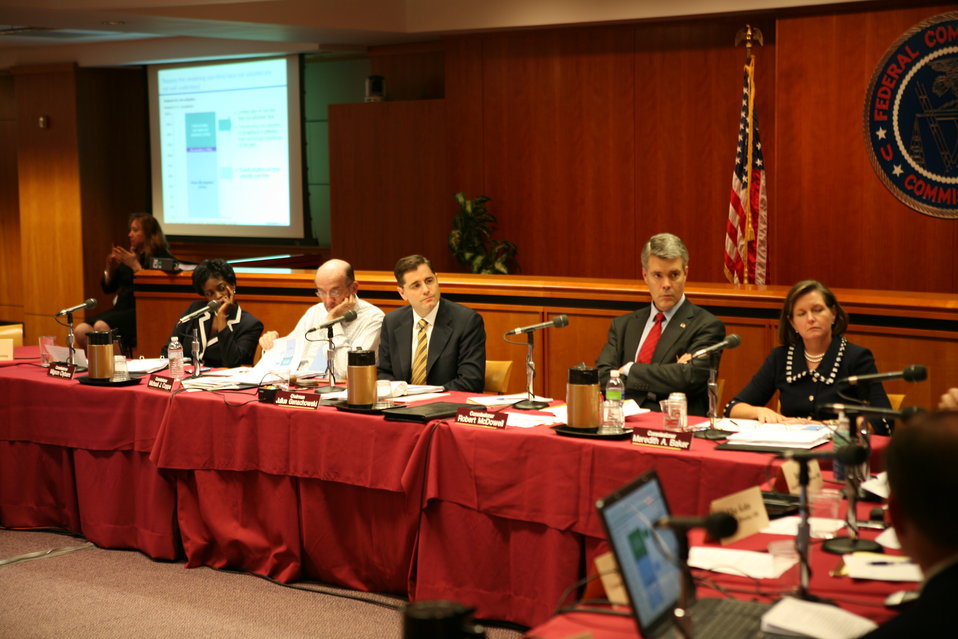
Broadband Midterm Review 9-29-09